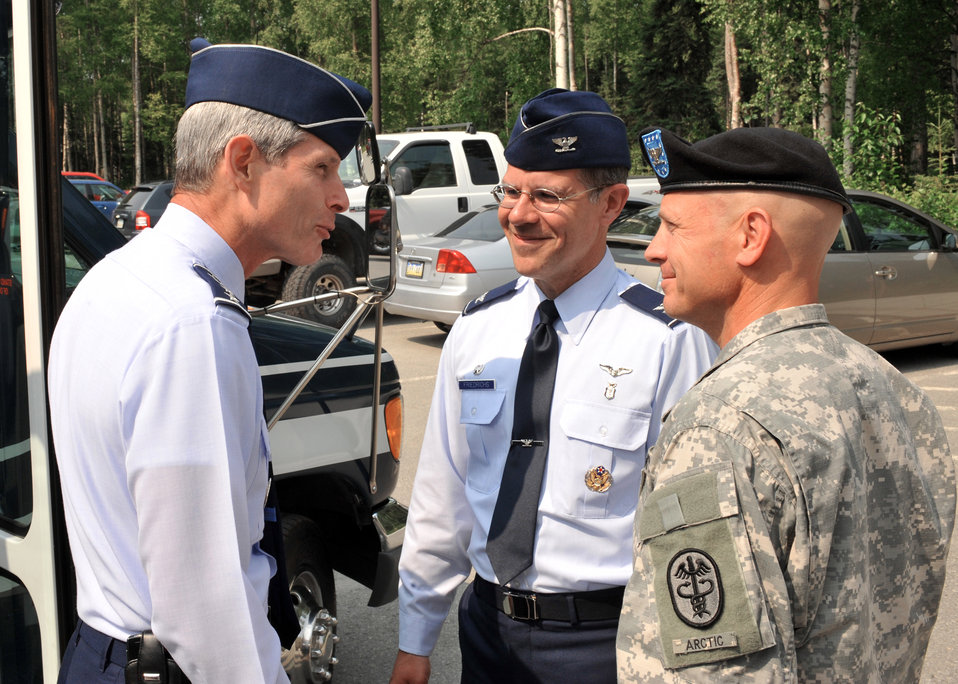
CSAF visit to Elmendorf AFB

Air Force Chief of Staff Gen. Norton Schwartz is greeted by Col. Paul Friedrichs, 3rd Medical Group commander, and Army Col. Ron Stephens, Basset Army Community Hospital, July 6 during his visit to Elmendorf Air Force Base, Alaska.